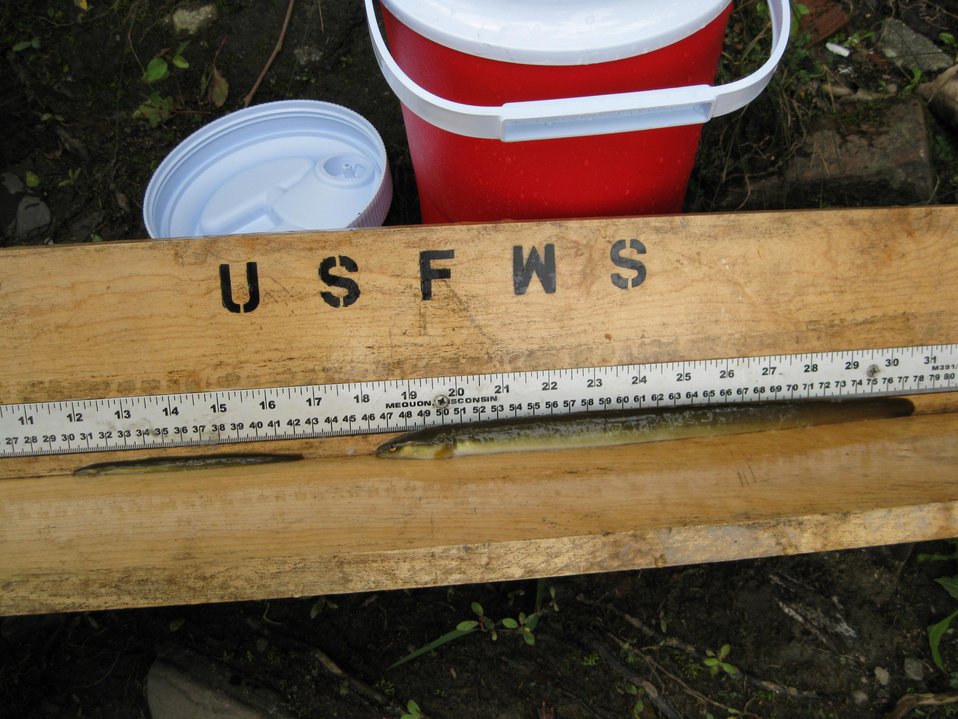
American eel

A juvenile eel. Female American eels can grow to 5 feet in length, and males usually reach about 3 feet.